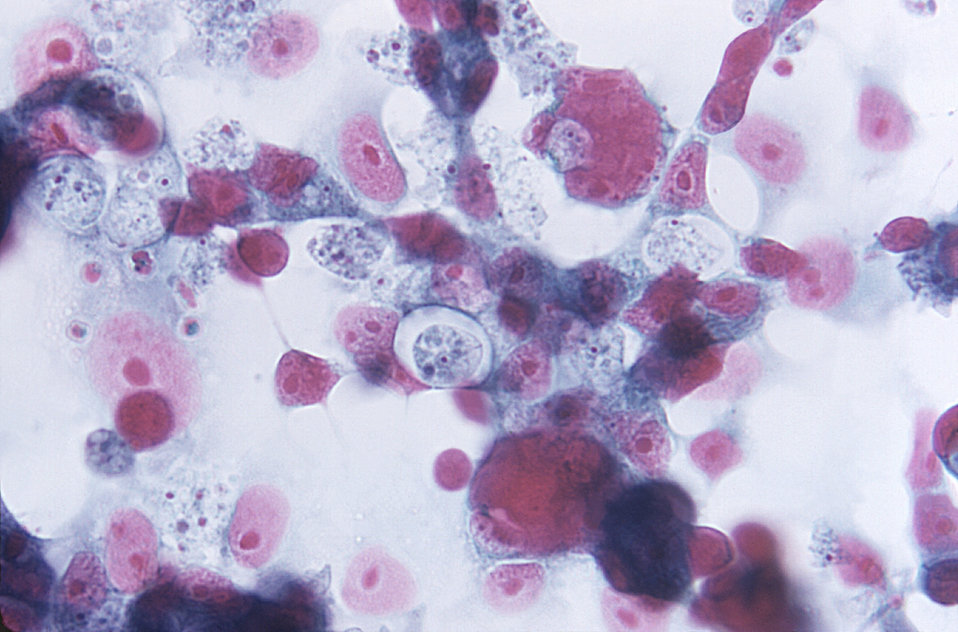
Magnified 500X, this 1973 Trichrome-stained photomicrograph revealed the presence of Naegleria gruberi, free-living amoebae in a human brain tissue specimen, in a case of primary amoebic meningoencephalitis (PAM). Free-living amoebae belonging to the genera Acanthamoeba, Balamuthia, and Naegleria, are important causes of disease in humans and animals.What is Naegleria?